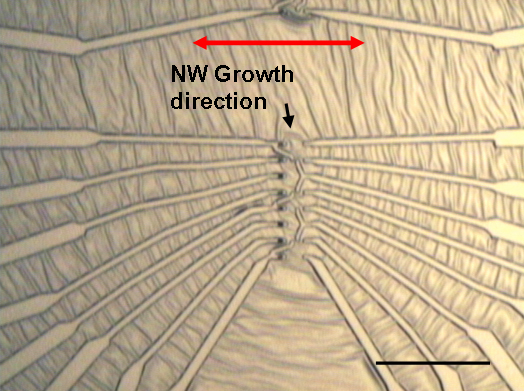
NIST Demos Industrial-Grade Nanowire Device Fabrication

Optical image shows metal electrodes attached to zinc oxide nanowires using the NIST technique. Dark spots near the center are the gold pads that start nanowire growth; red arrow shows direction of growth. Scale bar is 50 micrometers long.